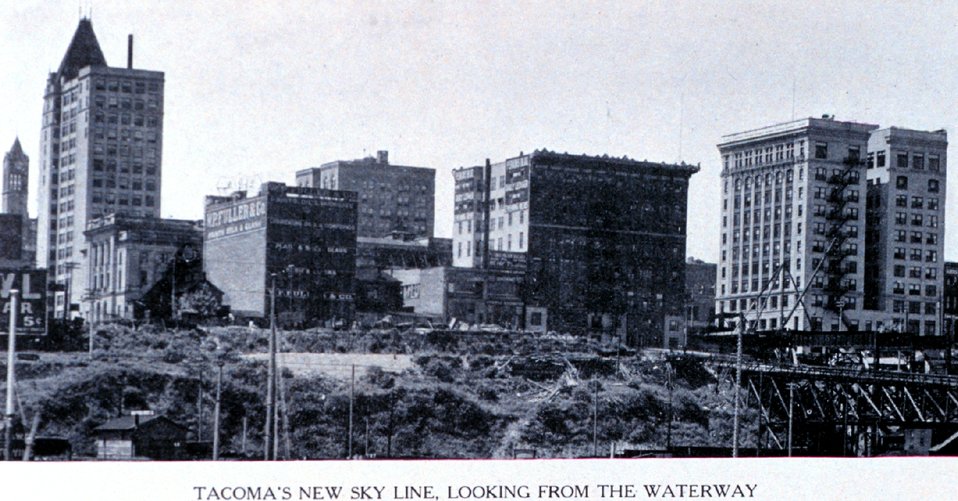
'Tacoma's New Skyline, Looking from the Waterway'. In: 'Puget Sound and Western Washington Cities-Towns Scenery', by Robert A. Reid, Robert A. Reid Publisher, Seattle, 1912. P. 37.